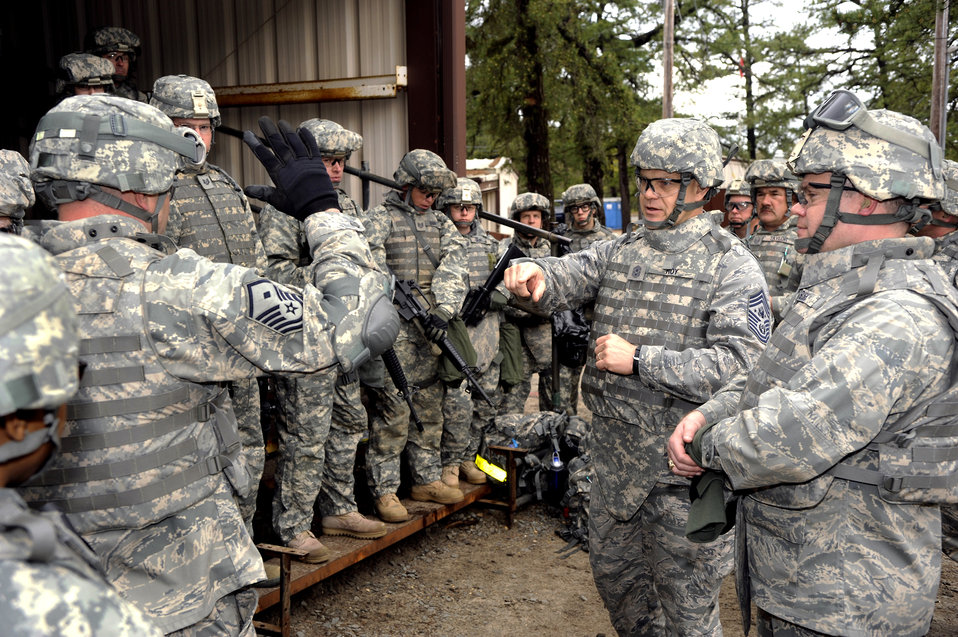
Senior leader experiences pre-deployment training

Chief Master Sgt. of the Air Force James A. Roy holds a question and answer session while visiting Airmen during Combat Skills Training April 27, 2010, at Joint Base McGuire-Dix-Lakehurst, N.J.